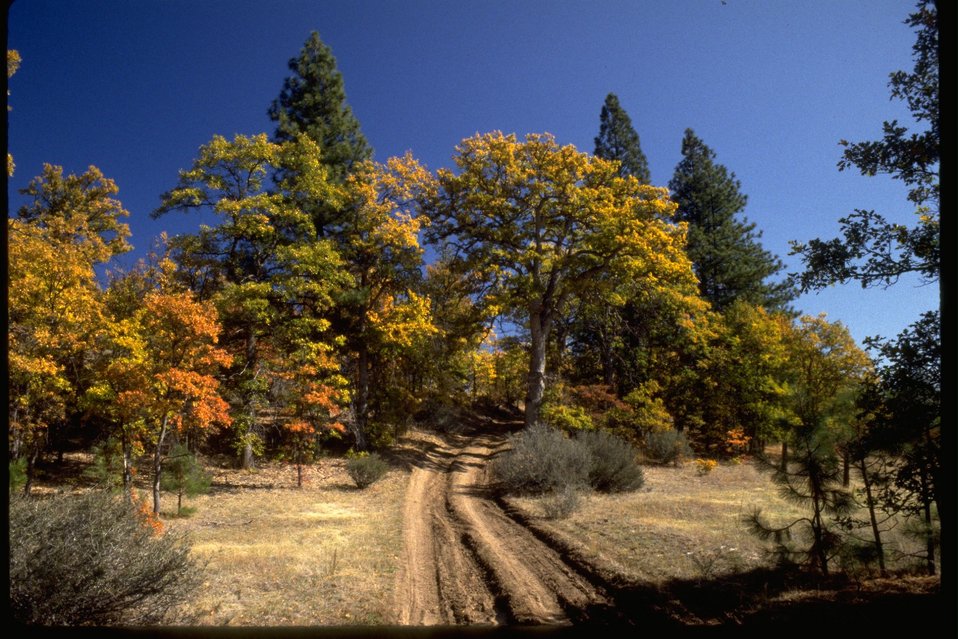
Schoheim Road, Agate Flats.